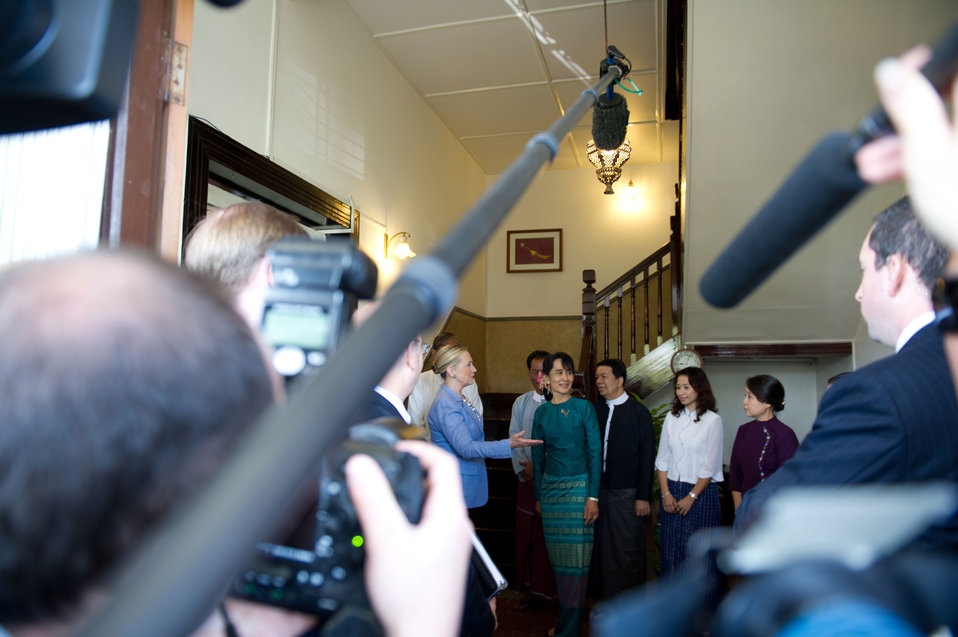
Secretary Clinton Meets with Aung San Suu Kyi

U.S. Secretary of State Hillary Rodham Clinton visits Daw Aung San Suu Kyi at her house in Rangoon, Burma, on December 2, 2011.